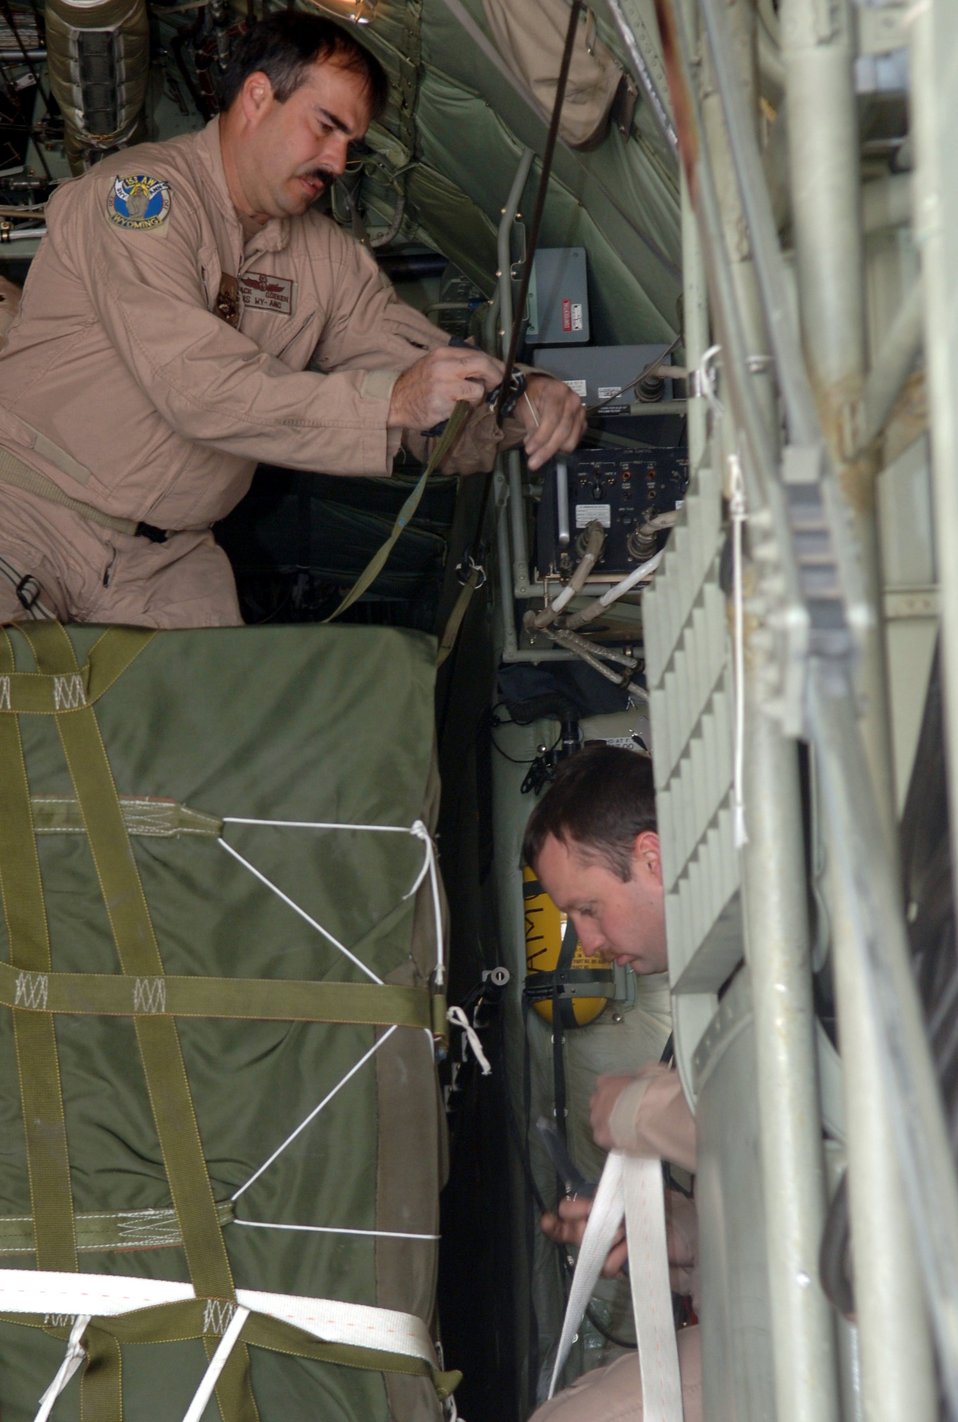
Airdrop in Afghanistan

BAGRAM AIR BASE, Afghanistan (AFPN) -- Senior Master Sgt. Jack Goeken rigs a static line inside a C-130 Hercules to an anchor cable as Staff Sgt. Trenton Lloyd prepares a container for a humanitarian airdrop here Jan. 24. Sergeants Groeken and Lloyd are C-130 loadmasters with the 774th Expeditionary Airlift Squadron. C-130s from the 774th EAS have flown multiple airdrops delivering supplies to help Afghan civilians in remote regions get through the winter. The loadmasters are from the Air National Guard's 153rd Airlift Wing at Cheyenne, Wyo.